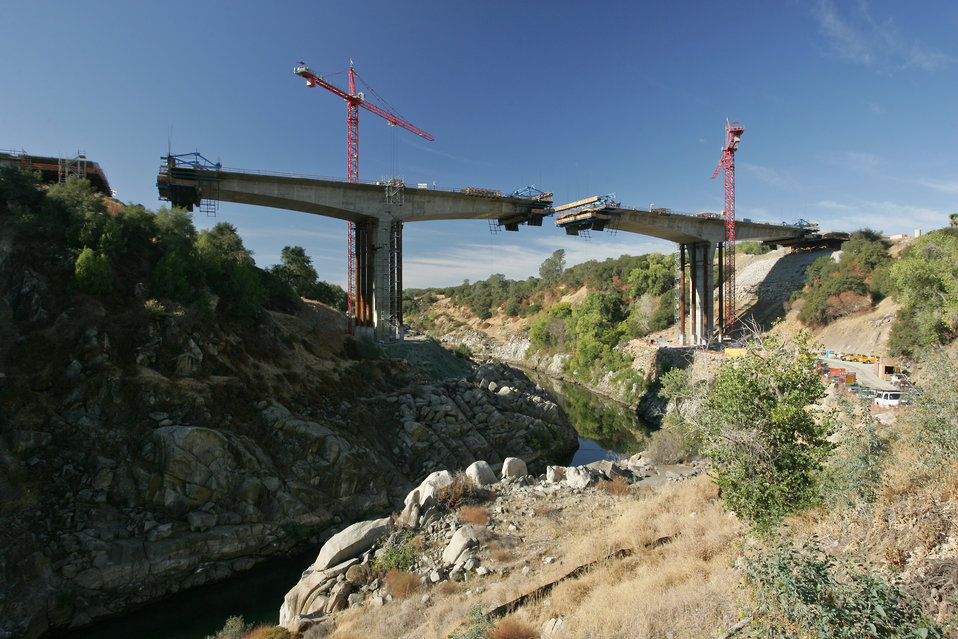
Bridge Segments and Piers

FOLSOM, Calif. (Jan. 24, 2011) - Two bridge segments reach out from their piers across the American River during construction of the Folsom Lake Crossing bridge here on Oct. 1, 2008. The U. S. Army Corps of Engineers Sacramento District was authorized to build the bridge in 2004, after security concerns closed the road atop the dam, a major commuter throughway, in 2003. The Corps completed the bridge in March 2009.